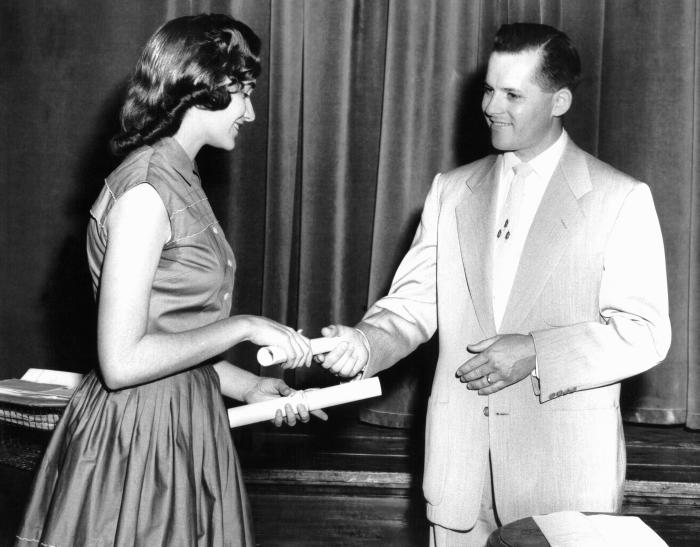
Dr. Max Moody is shown here presenting an award to a high school student for her entry in RESA-Sigma Xi contest.